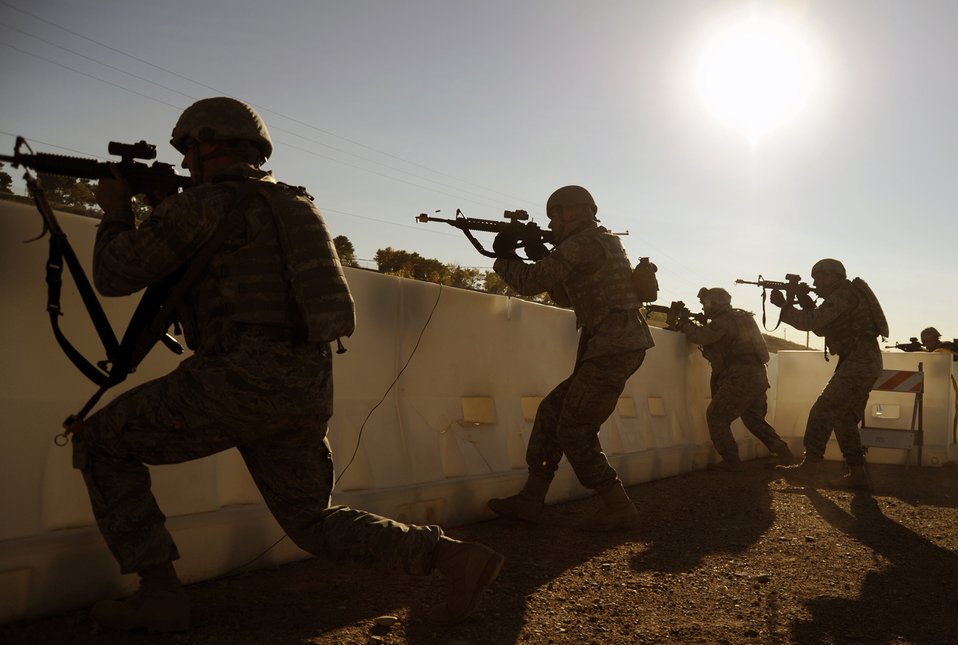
We've got you covered

Airmen with the 75th Security Forces Squadron provide cover fire during a Security Forces Combat Readiness Training exercise at Hill Air Force Base, Utah, Oct. 1, 2010. The CRT course provides Airmen with the basic skills needed to deploy, including tactical movements, land navigation, and self aid and buddy care.